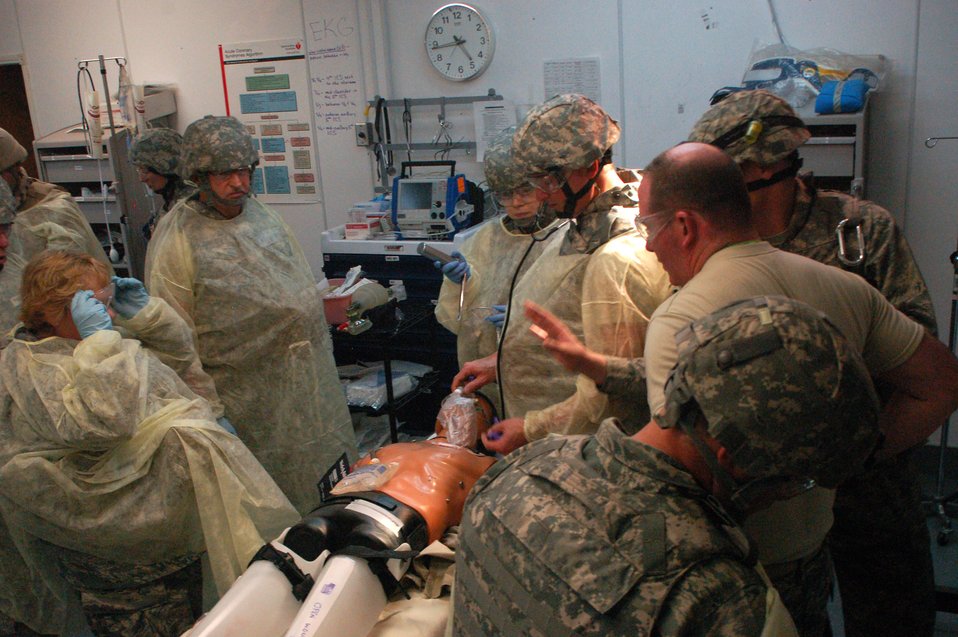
Sather medics prepare for worst,

The 447th Expeditionary Medical Squadron is made up of only five doctors, one nurse and six medics, but with the training the non-clinical squadron members recieved March 21, most of them are now able to assist in trauma care, which helps the core medical personnel during an emergency.